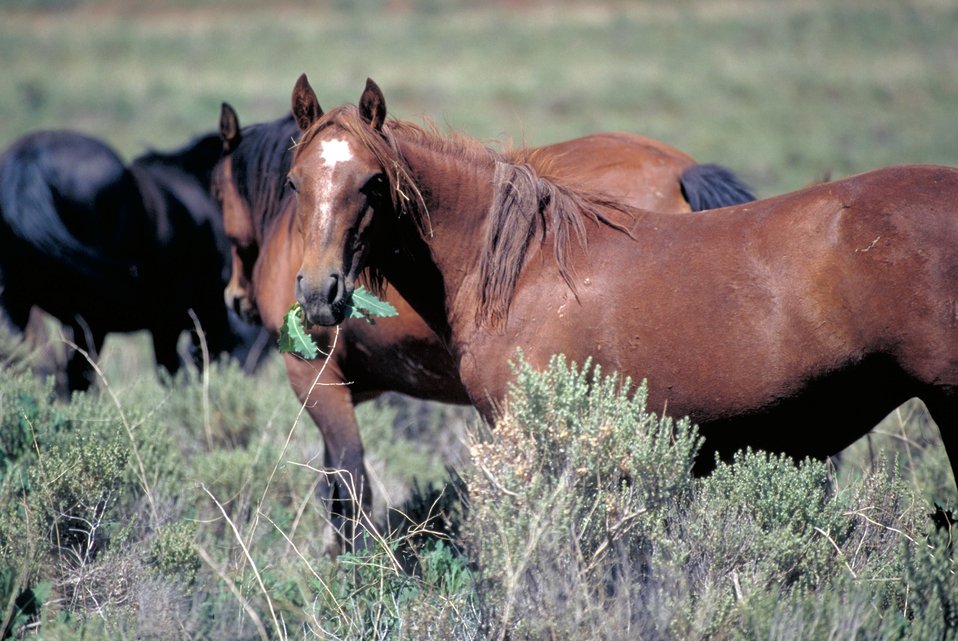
Onaqui Herd near Dugway, Utah.